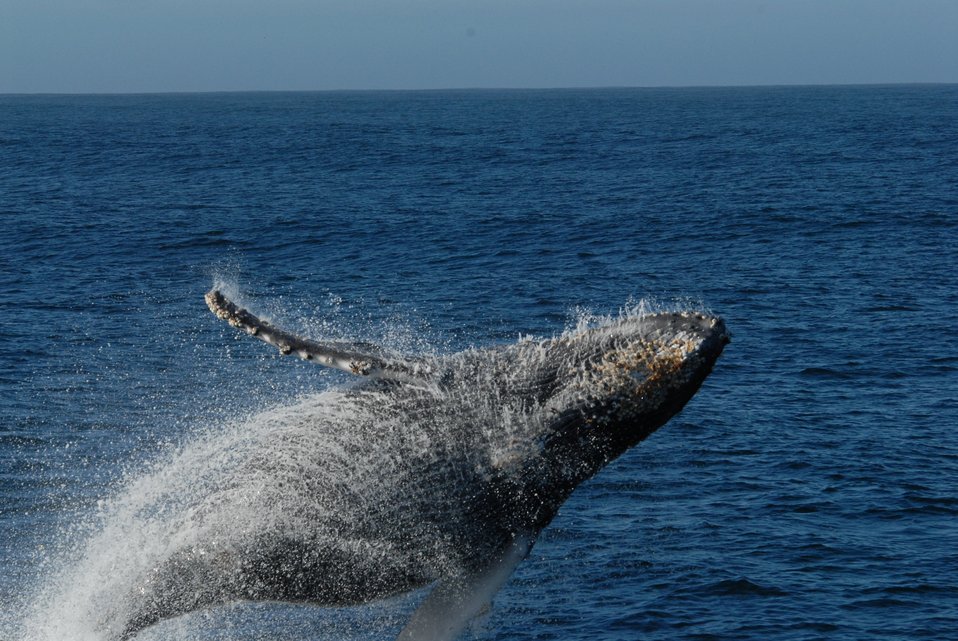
Humpback whale breaching